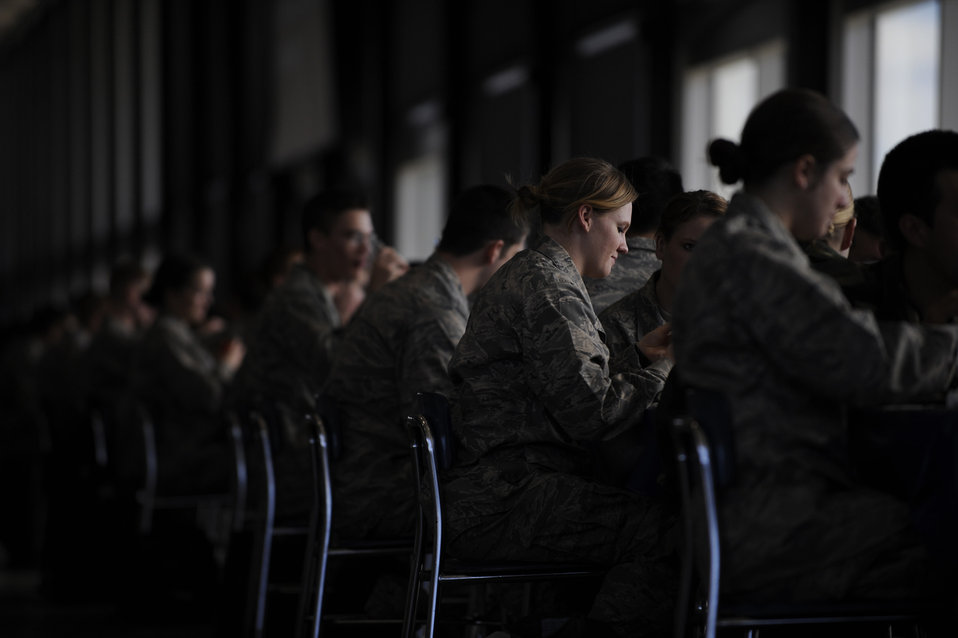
U.S.Air Force Academy Mitchell Hall Cadet Dining Facility

Cadets eat lunch Jan. 23 at Mitchell Hall Cadet Dining Facility at the U.S. Air Force Academy in Colorado Springs, Colo. The dining facility feeds approximately 4450 cadets and sits on 1.75 acres.